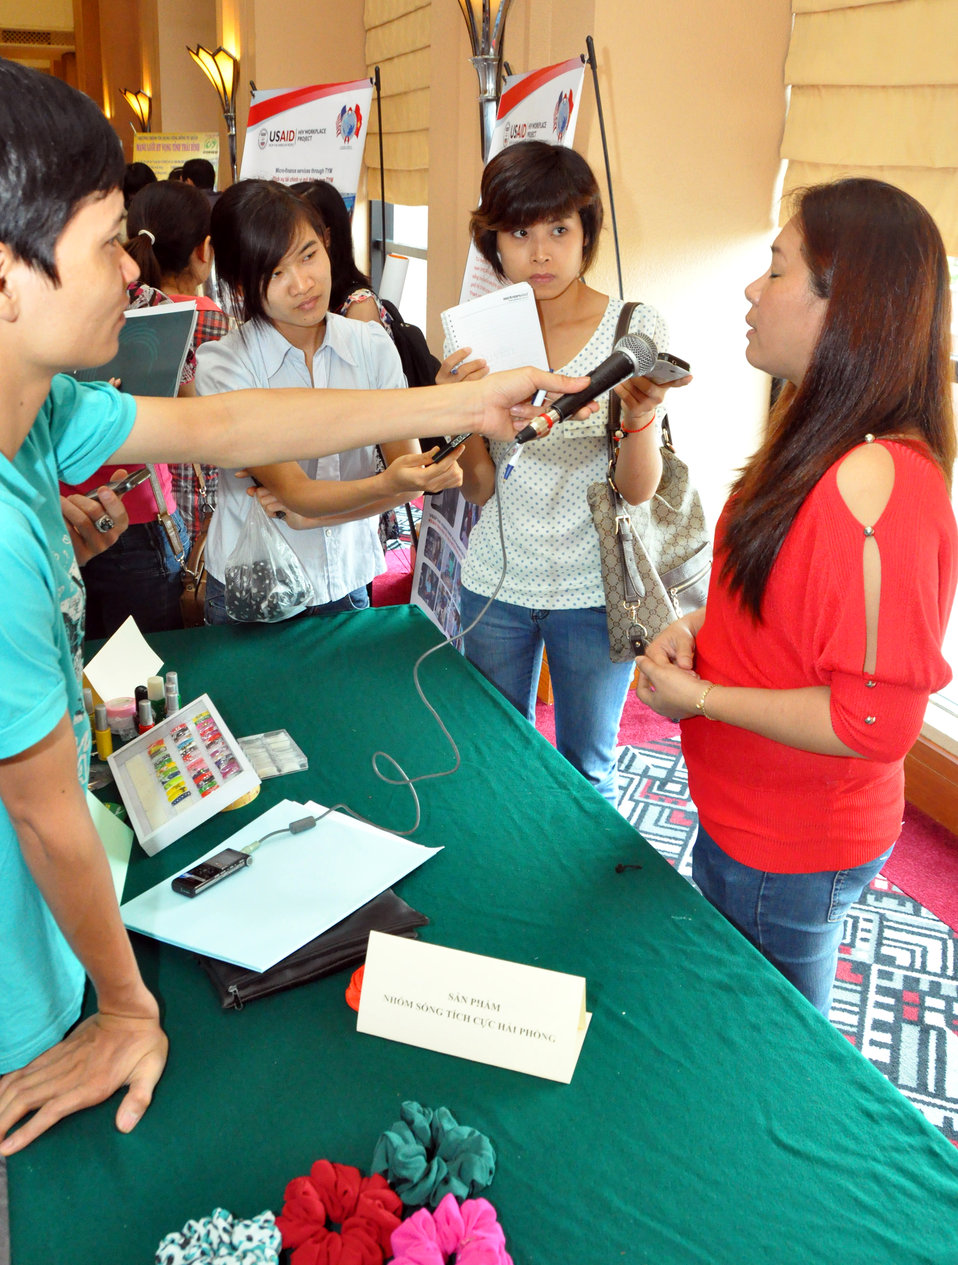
Microfinance Plan for People at Risk or Affected by HIV Found Sustainable

Photo: @USAIDVietnam

USAID supported a pilot model for microfinance, including credit, savings and insurance, for people living with or affected by HIV or those at high risk of becoming infected. After one year, the model has been found to be successful, replicable, and sustainable.